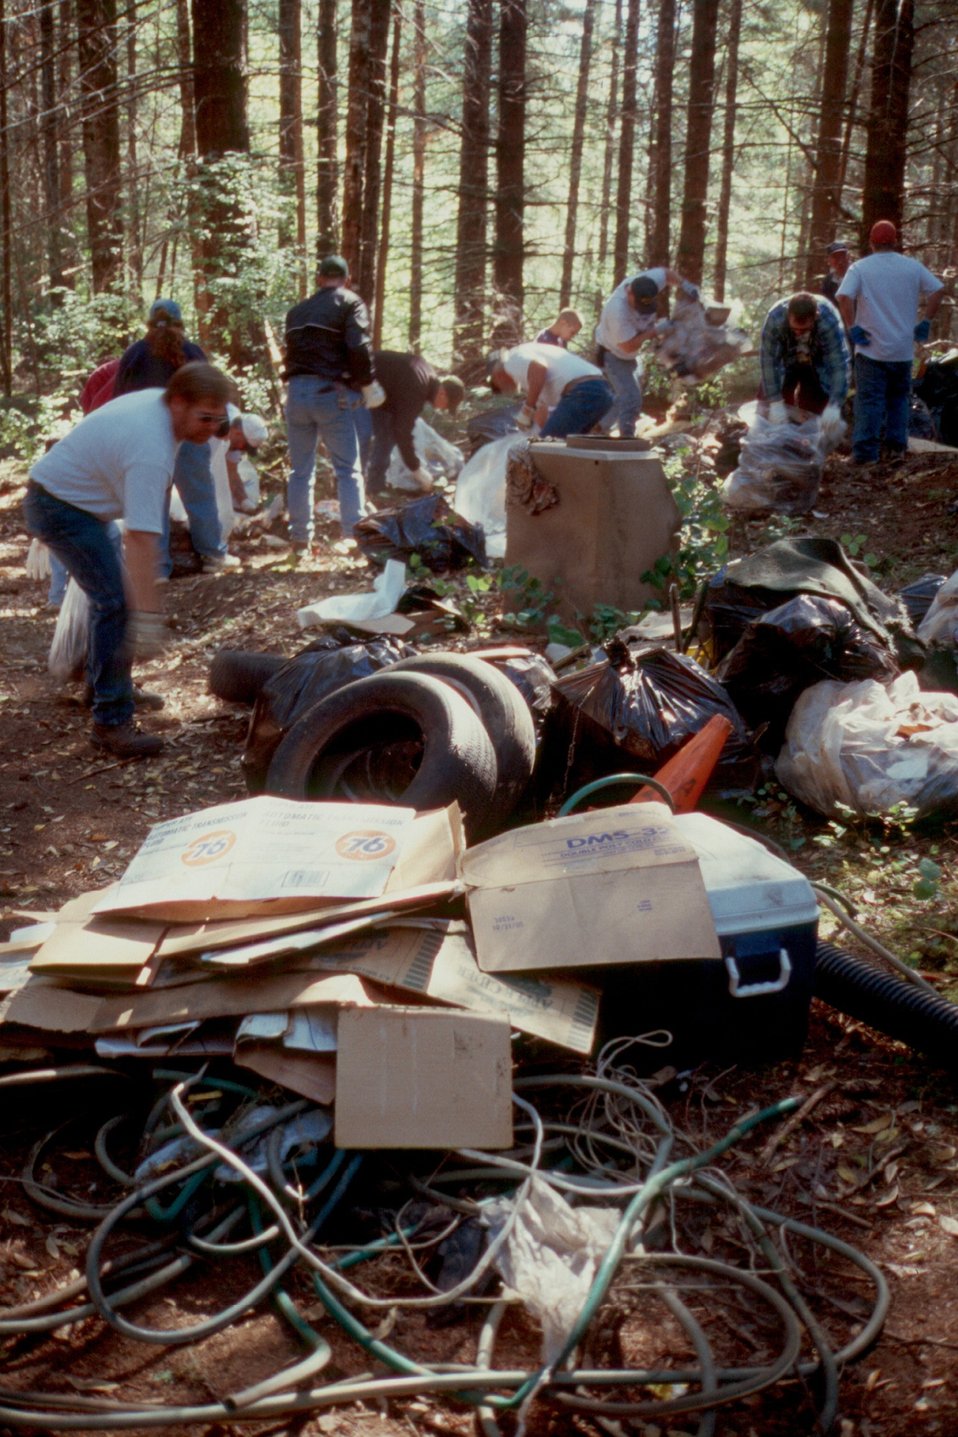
Junction City Jeepers clean up a hidden trash site on BLM lands